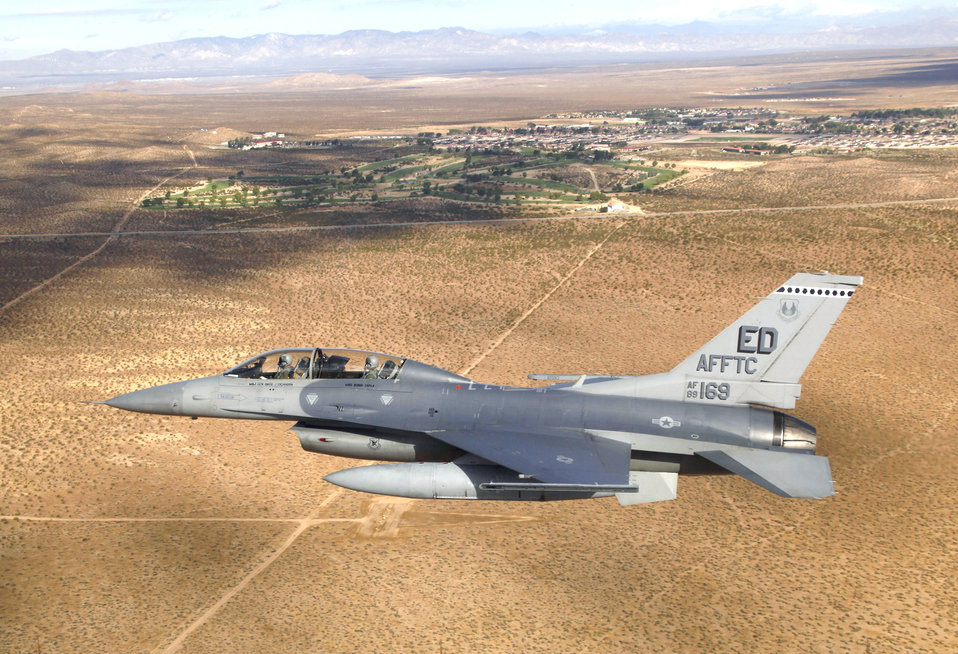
A long good-bye

Maj. Gen. David J. Eichhorn takes a last look at Edwards Air Force Base, Calif., from his F-16 Fighting Falcon during his final proficiency flight Oct. 4, 2010. General Eichhorn heads to his next assignment at Kirtland AFB, N.M., where he will serve as the Air Force Operational Test and Evaluation Center commander.